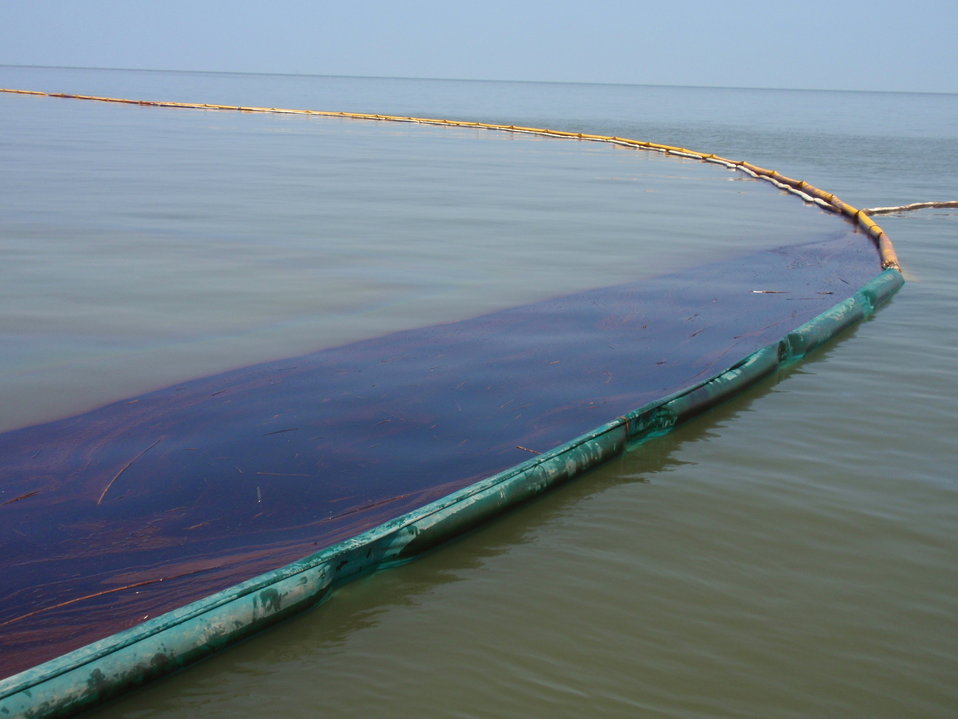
Working to contain and deal with some of the released oil.